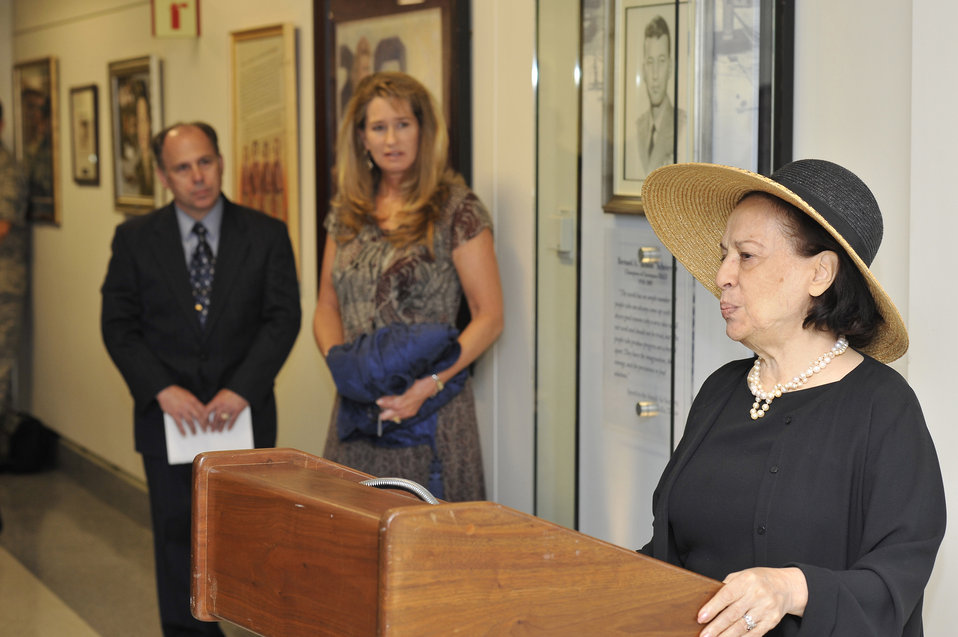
Officials unveil portrait of AF pioneer

Joni James, widow of Gen. Bernard Schriever, speaks at a ceremony for the unveiling of a portrait of her late husband July 8 at the Pentagon. The portrait, a pencil drawing by Air Force visual information specialist Thomas Segars, left, will hang permanently as a memorial to General Schriever. Lori Dawson, center, also an Air Force visual information specialist, designed the display in which the portrait hangs.